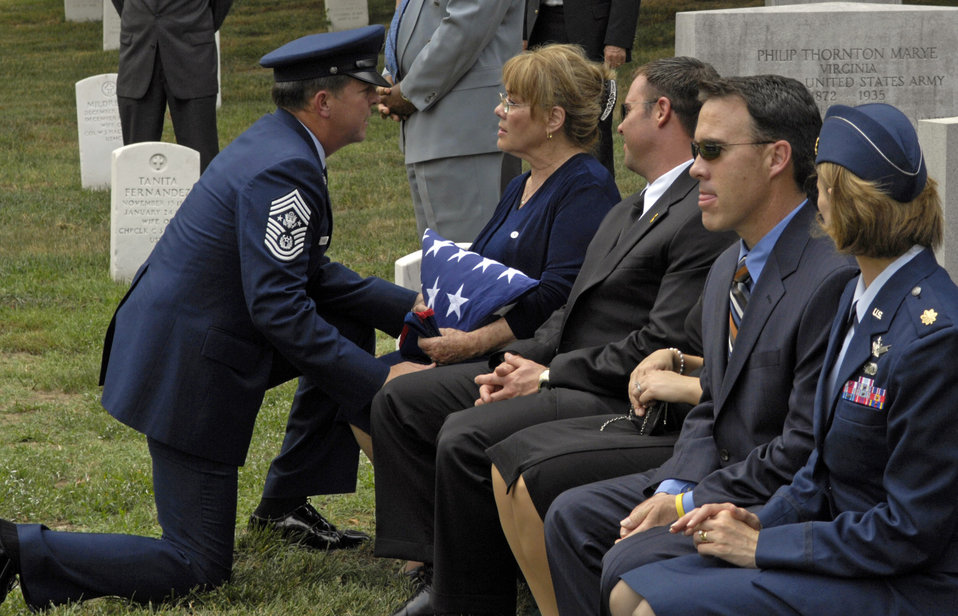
Chief Pfingston laid to rest at Arlington

Chief Master Sergeant of the Air Force Rodney J. McKinley gives his regards to the family of former Chief Master Sergeant of the Air Force Gary R. Pfingston at his burial site July 6 at Arlington National Cemetery, Va. Chief Pfingston, the 10th CMSAF, was born in Evansville, Ind., and entered the Air Force in February 1962. He passed away June 23 in San Antonio.